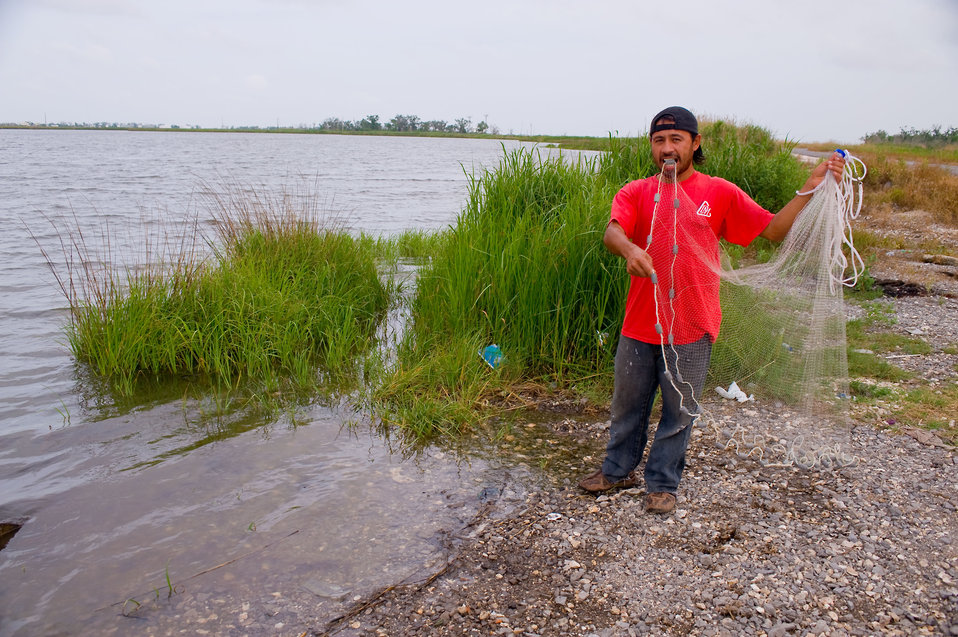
Shoreline conversations

May 13, 2010.